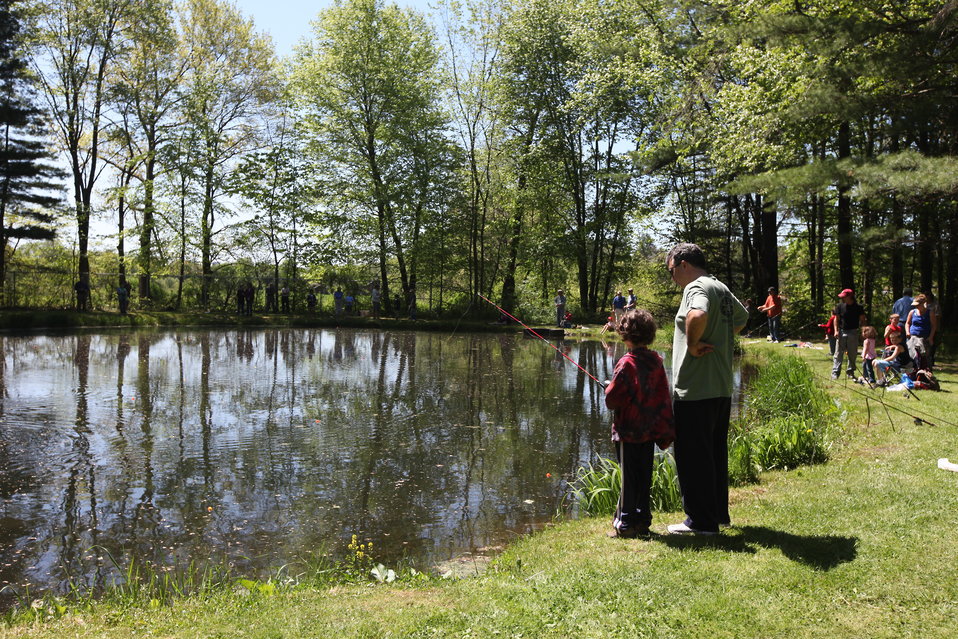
Youth Fishing Derby 2012

Megan Nagel/USFWS